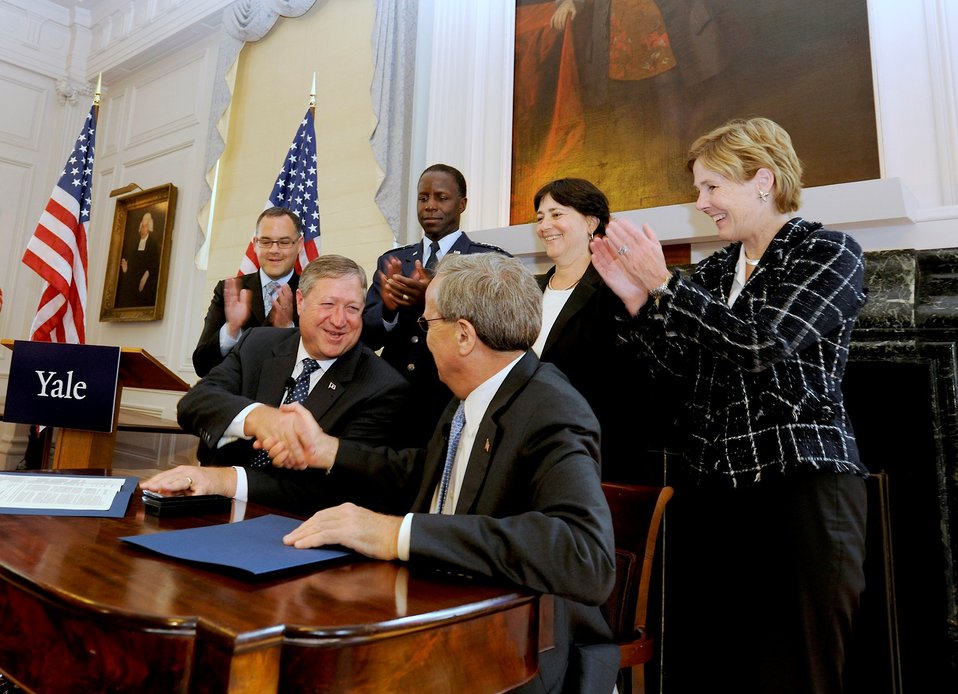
SECAF at Yale ROTC detachment

Secretary of the Air Force Michael Donley and Yale University president
Richard Levin shake hands after signing an agreement to establish an Air
Force ROTC detachment at Yale during a signing ceremony at the university's
Woodbridge Hall, Sept. 12, 2011. Classes for cadets will begin at Yale in
the fall of 2012.